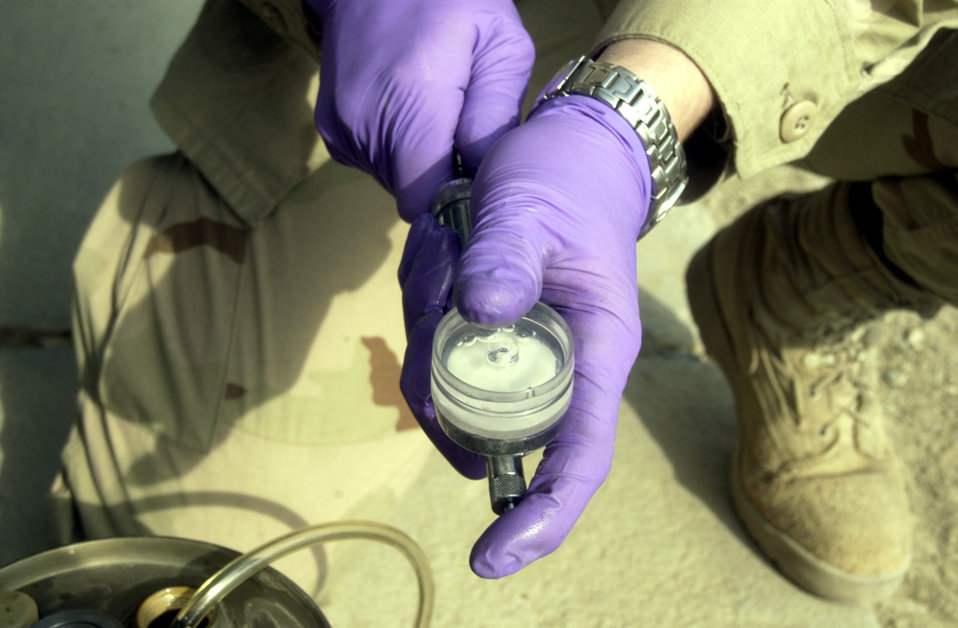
No fuel, no fight

BAGRAM AIR BASE, Afghanistan -- Staff Sgt. Robert Armentrout checks for contamination in a jet fuel sample. He is a fuels specialist assigned to the 455th Expeditionary Operations Group.